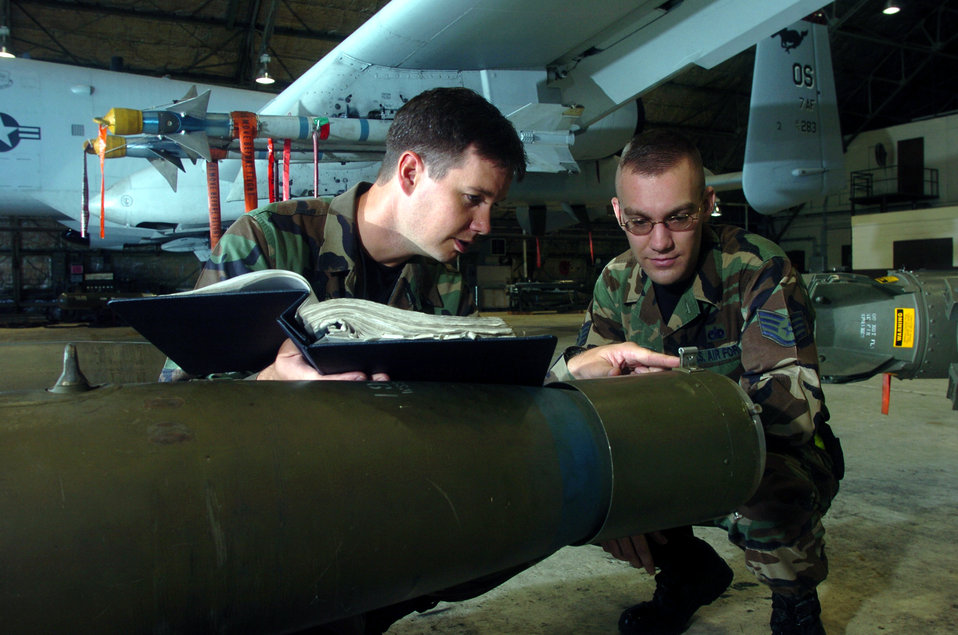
Don't bomb eval

OSAN AIR BASE, South Korea -- Tech. Sgt. Sean Savage (left) shows Staff Sgt. Jason Tremmel proper weapons loading procedure on a Mark-82 bomb during a quarterly proficiency evaluation here. The training is conducted to ensure weapons loaders meet safety and time requirements. Sergeant Savage is an instructor with the 51st Maintenance Squadron, and Sergeant Tremmel is a weapons loader with the 25th Aircraft Maintenance Unit.